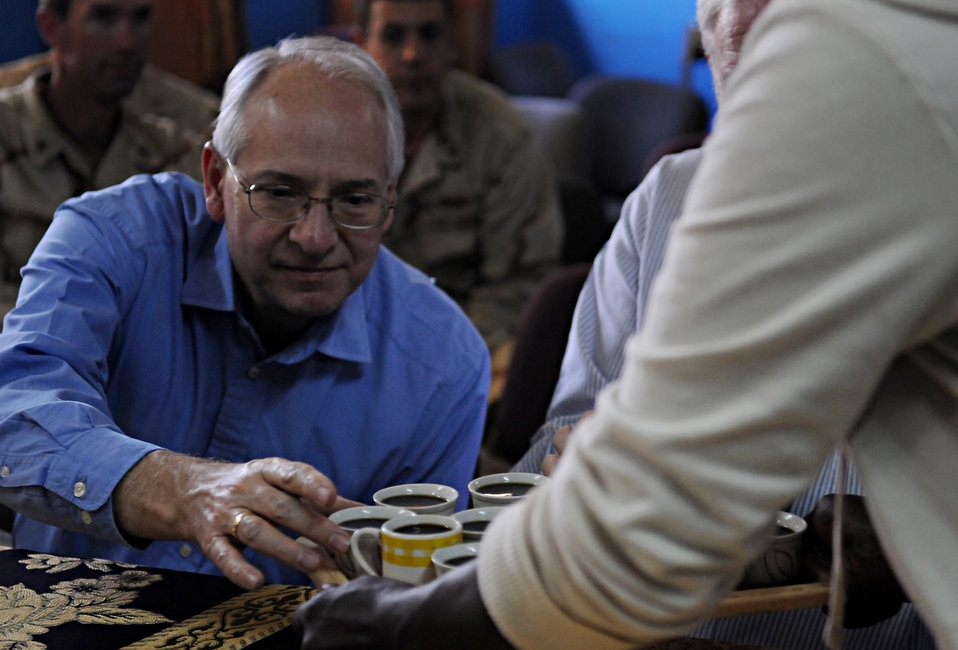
144 hours in Ethiopia: The Negele Borena Bridge

The Honorable Donald Booth, the U.S. ambassador to Ethiopia, selects a drink from a tray during a coffee ceremony at Negele Borena, Ethiopia, Dec. 6, 2011. The ceremony followed the dedication of a bridge built in the town, which provides safe passage for pedestrians and livestock seeking crossing dangerous river.